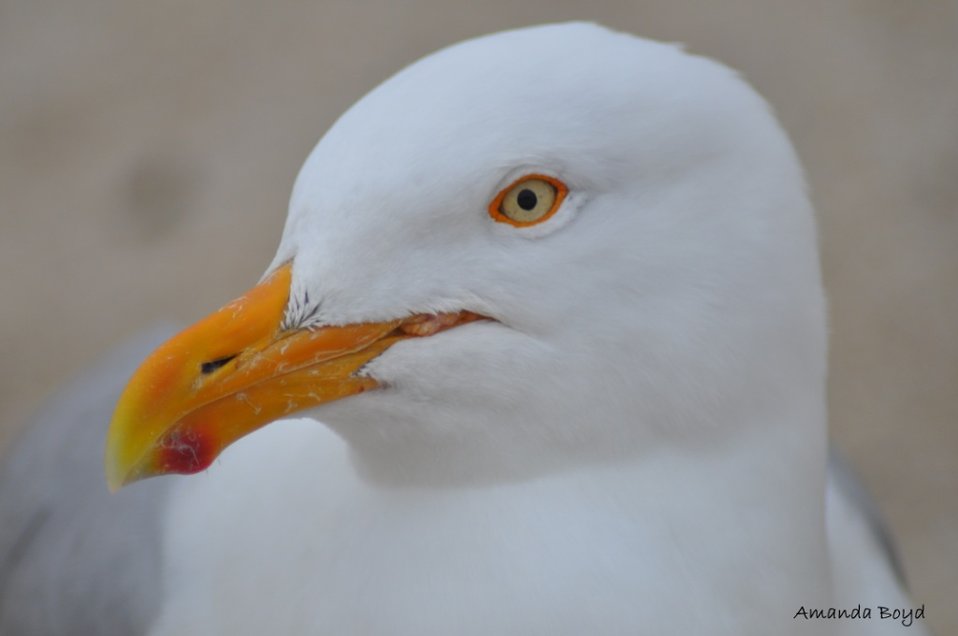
Henry the Gull

Nantucket National Wildlife Refuge